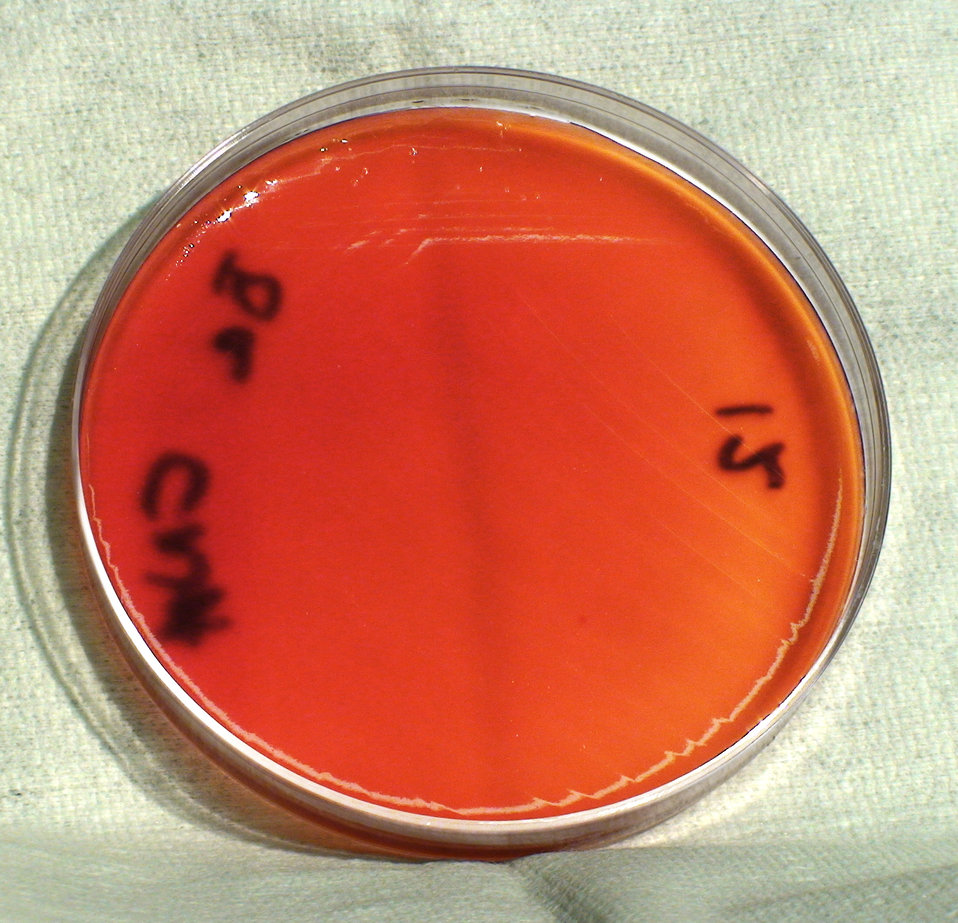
This photograph depicts light colonial growth displayed by Gram-positive, Pasteur strain, Bacillus anthracis bacteria, which was grown on a medium of CNA agar, for a 24 hour time period, at a temperature of 37�C. See PHIL 12389 for a closer view of these bacteria colonies. B. anthrax is the bacterial pathogen, which causes the disease known as anthrax.Clinical Features: